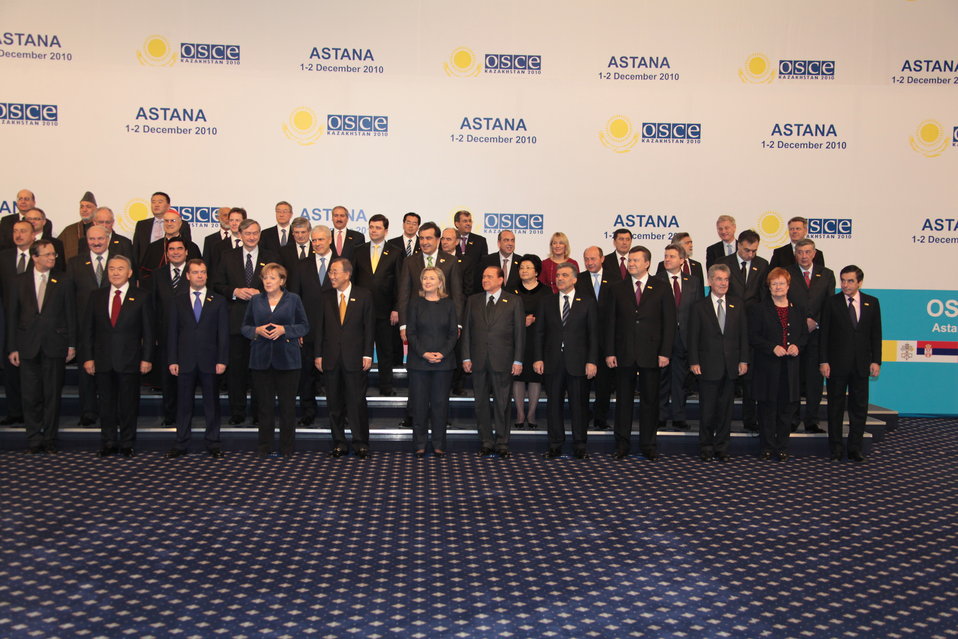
The Heads of the International Delegations Pose for a Photo

The heads of the international delegations, including U.S. Secretary of State Hillary Rodham Clinton, pose for a “family photo” at the start of the 2010 OSCE Summit in Astana, Kazakhstan on December 1, 2010.